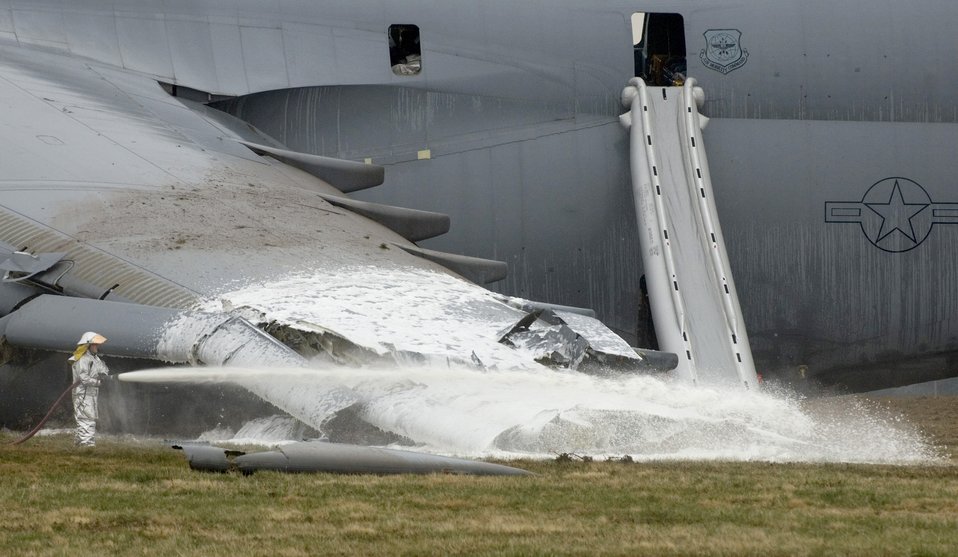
C-5 Galaxy crashes at Dover AFB

A firefighter hoses down the crash site of a C-5 Galaxy. The aircraft crashed at 6:30 a.m. EDT, today, April 3, 2006, at Dover Air Force Base, Del., just south of the base flightline.